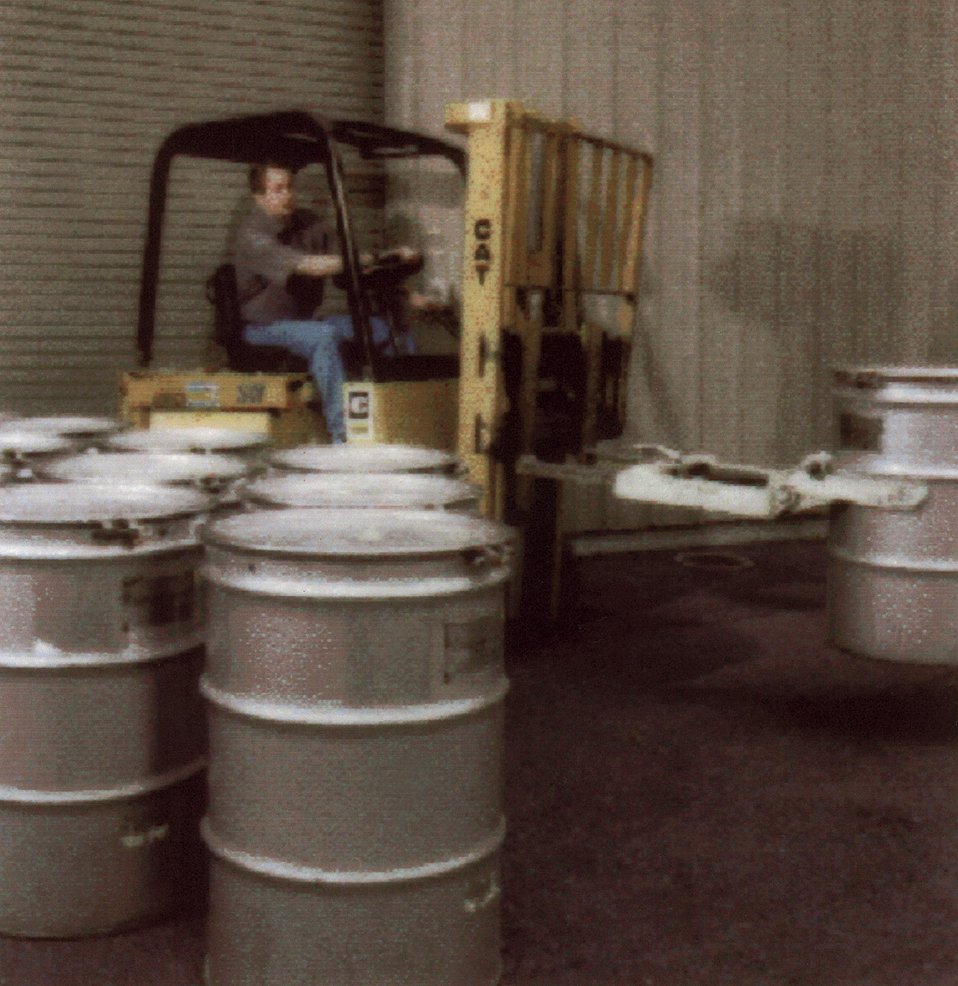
URANIUM NUGGETS PRODUCED AT LLNL PACKED IN 55-GALLON DRUMS FOR SHIPMENT TO COMMERCIAL FUEL FABRICATORS.

A DESIRED ISOTOPE OF A CHEMICAL ELEMENT MUST BE SEPARATED FROM THE REMAINING ISOTOPES, FOR USES RANGING FROM MEDICINE TO ENERGY TO WEAPONS APPLICATIONS. LLNL DEVELOPED AN EFFICIENT TECHNIQUE CALLED ATOMIC VAPOR LASER ISOTOPE SEPARATION (AVLIS), BASED ON THE FACT THAT DIFFERENT ISOTOPES OF THE SAME ELEMENT, WHILE ELECTRONICALLY IDENTICAL, HAVE DIFFERENT ELECTRONIC ENERGIES AND THEREFORE ABSORB DIFFERENT COLORS OF LASER LIGHT.